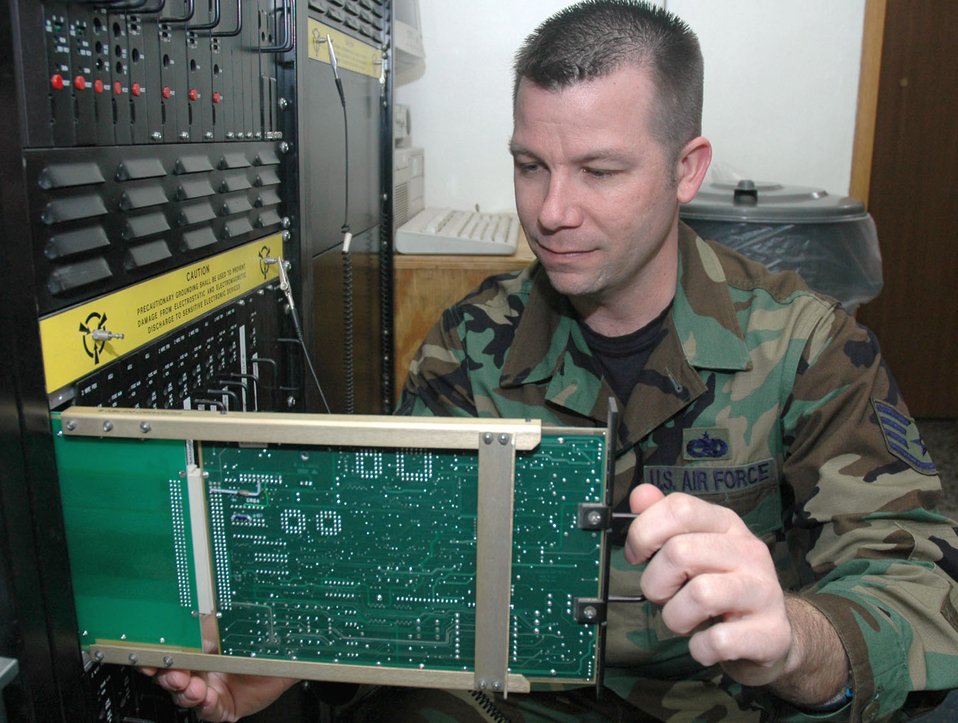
Keeping Tuzla airfield operational

TUZLA AIR BASE, Bosnia and Herzegovina (AFPN) -- Staff Sgt. Mark Beecroft aligns a telephone card while performing an annual certification on air traffic control and landing systems. He is assigned to the 401st Air Expeditionary Wing.